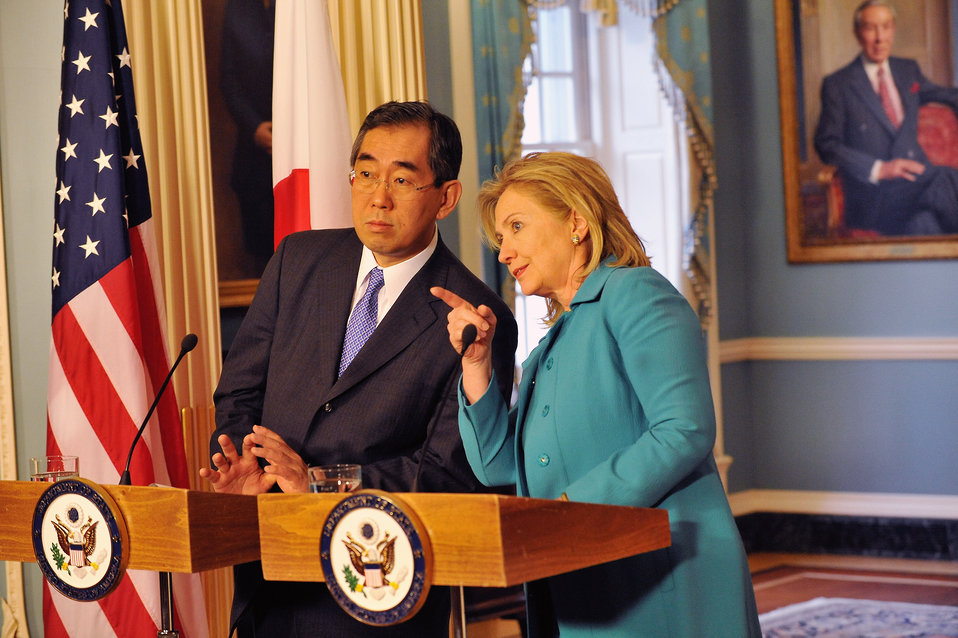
Secretary Clinton Speaks With Japanese Foreign Minister Takeaki Matsumoto

U.S. Secretary of State Hillary Rodham Clinton speaks with Japanese Foreign Minister Takeaki Matsumoto during their joint press conference, at the U.S. Department of State in Washington, D.C., on April 29, 2011.